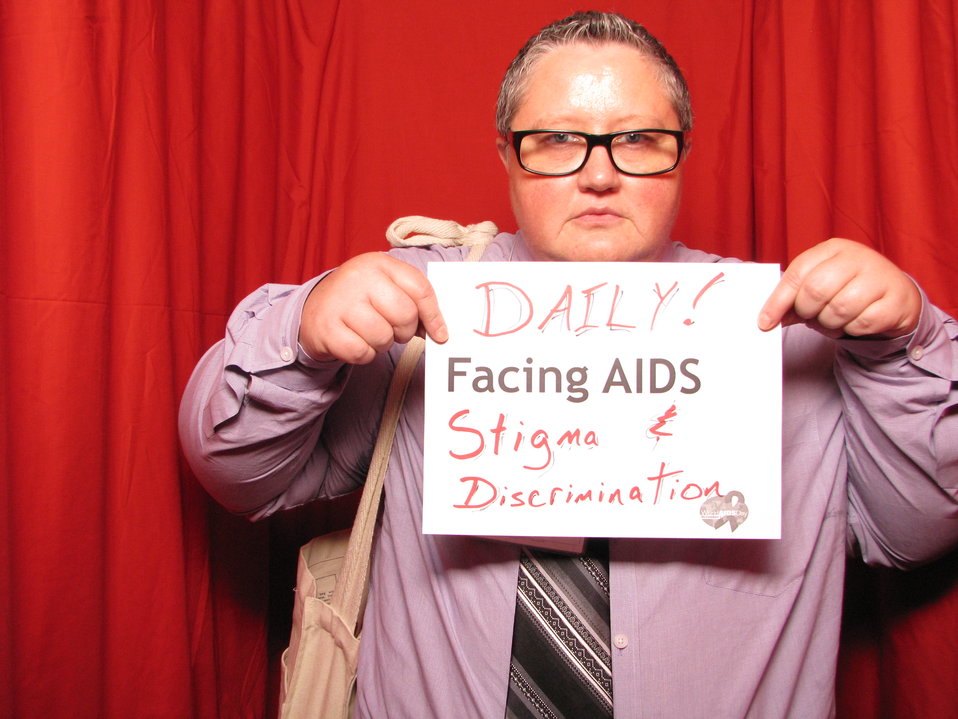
DAILY! FACING AIDS stigma and discrimination.

From the AIDS.gov photo booth at the U.S. Conference on AIDS, September 2010 (Orlando, FL).